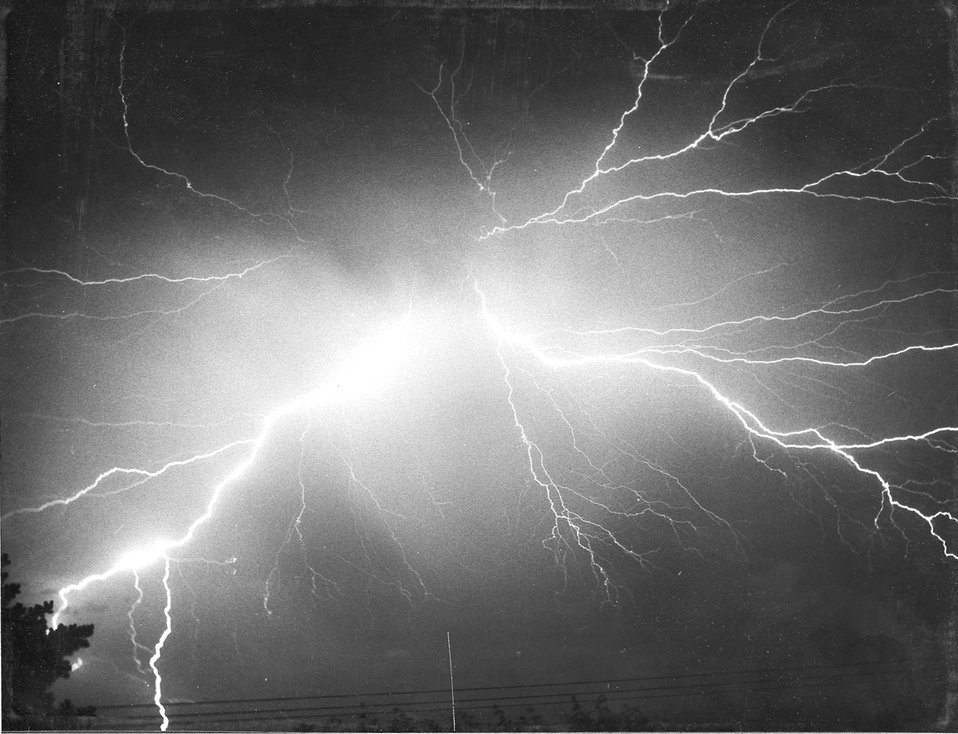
This photo was taken when the photographer was about 14. He was hanging out a second floor window in order to get an unobstructed view of the sky. After capturing this image, all he could do was utter WOWOWOW!!!!